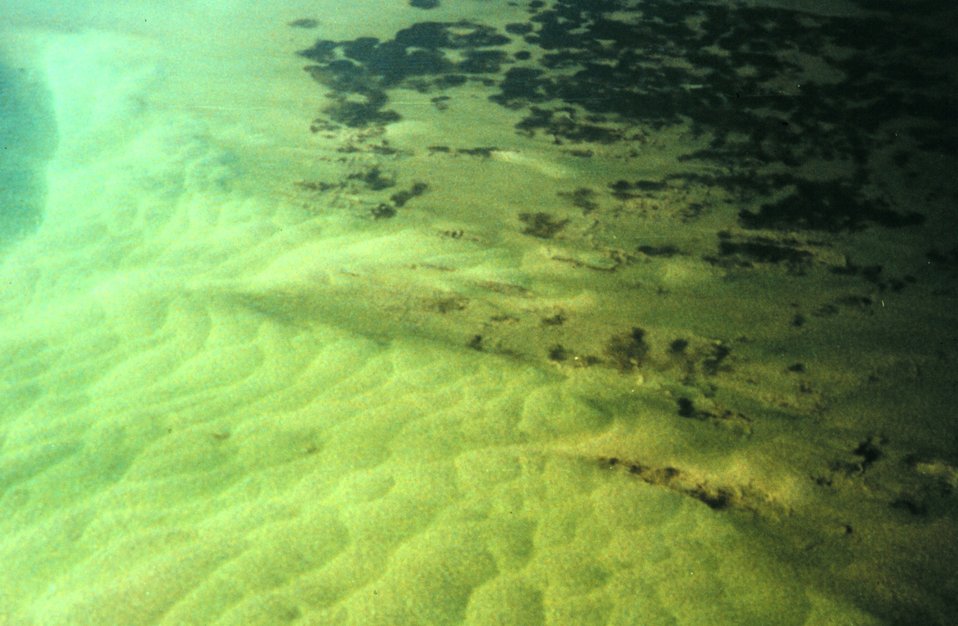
Giant sandwaves as seen from NOAA helicopter during SHOALS Lidar survey.